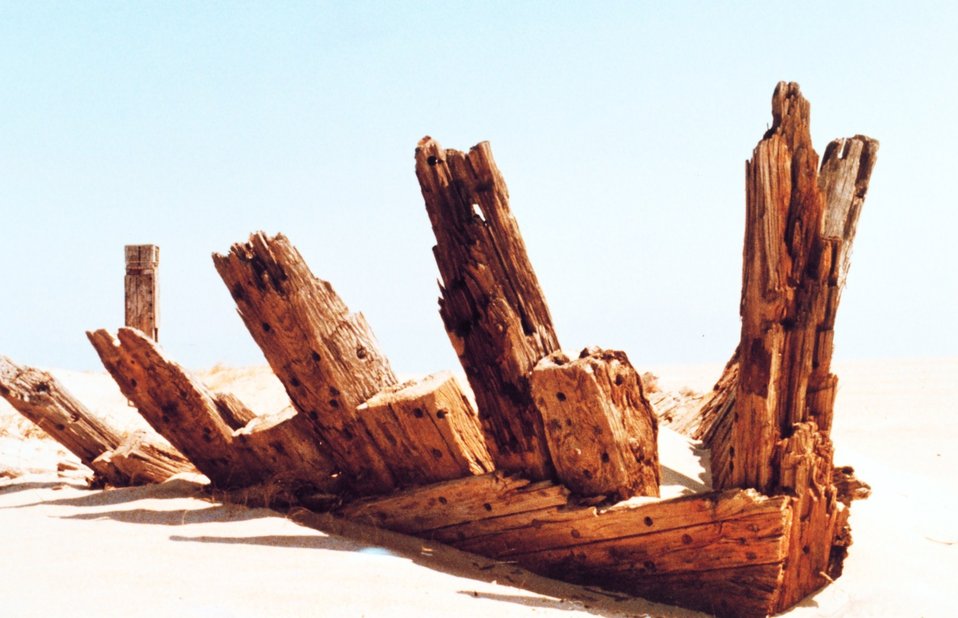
The ribs of a once mighty ship bare on the 'Graveyard of the Atlantic.'